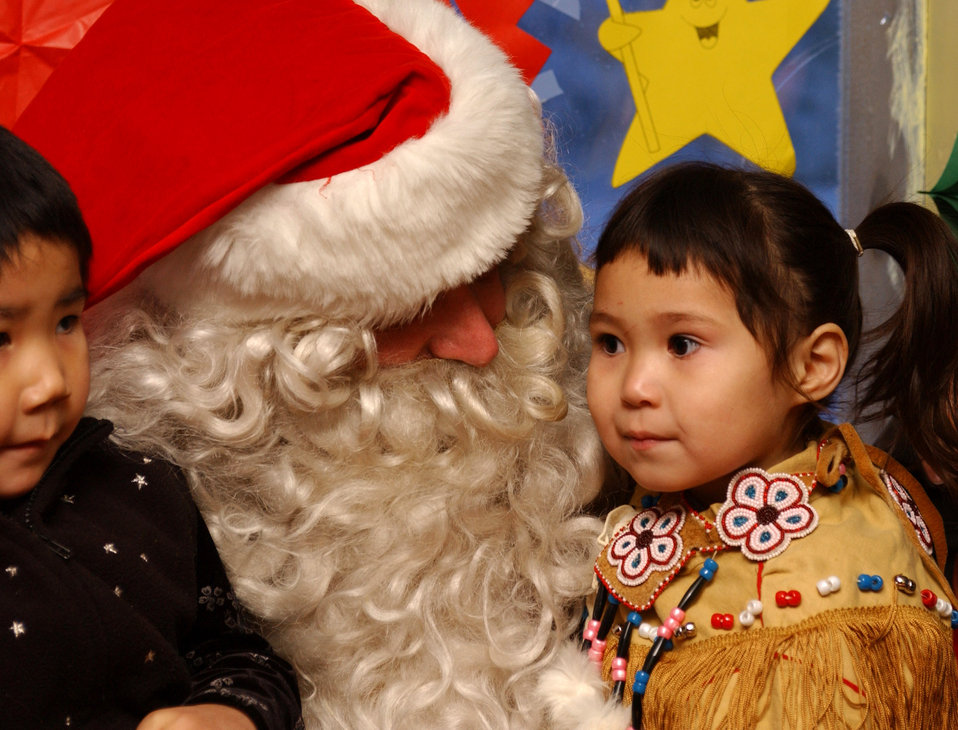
Arctic Village 2006

Santa holds 3-year-old Alyssa Gimmiel after arriving at the Arctic Village Community Center in Alaska. Santa made his 40th annual trip to Arctic Village (north of Fort Yukon, Alaska) on December 11. The Alaska Air National Guard will add Arctic Village to its short list of destinations during Operation Santa.